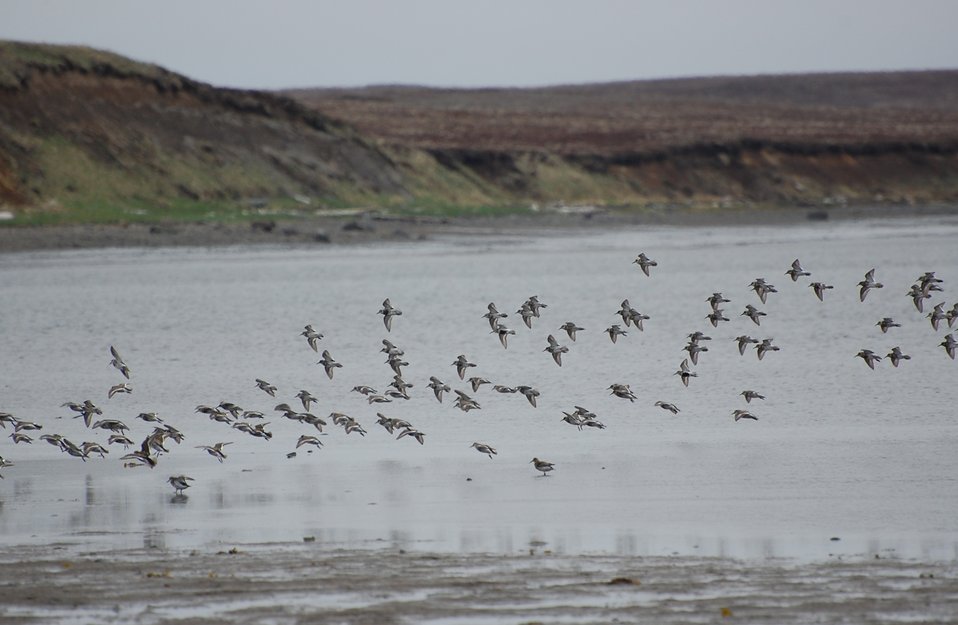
Rock Sandpiper flock

Kinzarof Lagoon, Izembek National Wildlife Refuge
Photo by Kristine Sowl,
USFWS, Public Domain